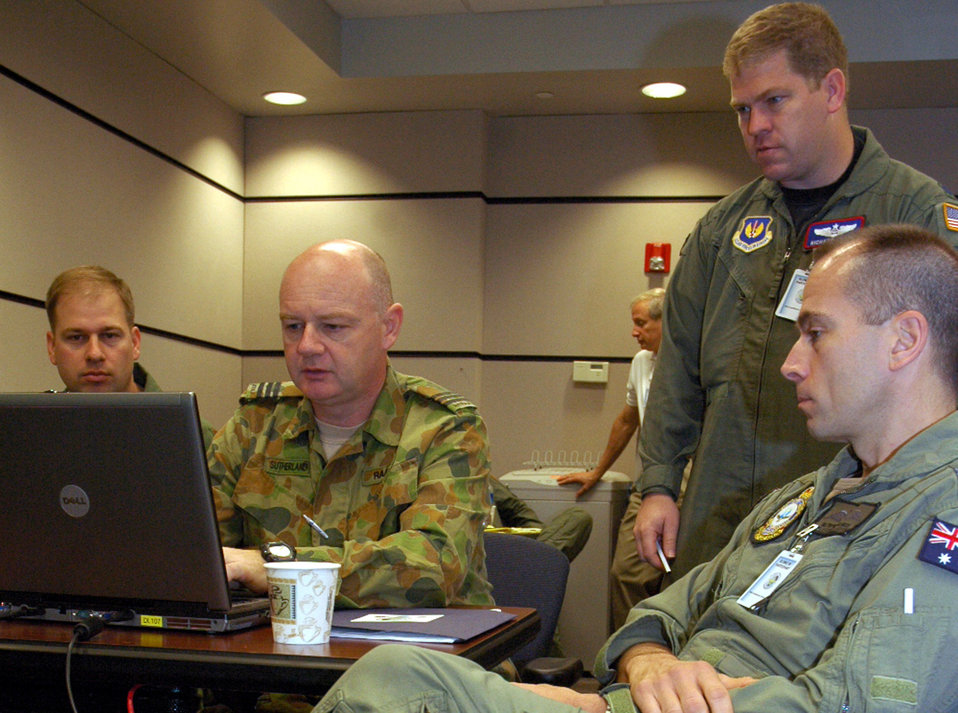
Global Mobility Wargame explores future of air mobility

Participants for the Global Mobility Wargame 2008 including members of the the Royal Australian Air Force work in the Air Force Expeditionary Center June 18 at Fort Dix, N.J. The wargame helps shape Air Mobility Command's strategic planning via evaluation of air mobility and logistics capabilities 12 years into the future.